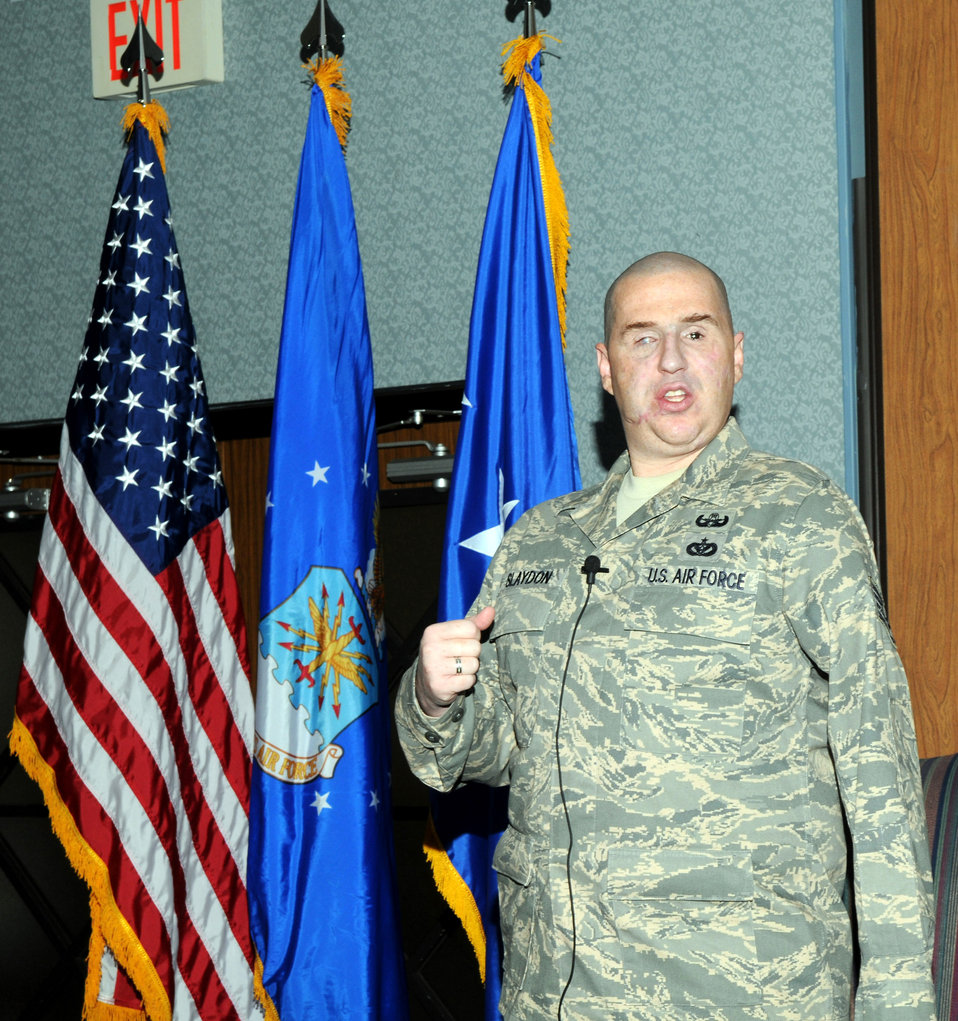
Wounded Airman: 'Absolute privilege to defend America'

Staff Sgt. Matthew Slaydon talks about his injuries and subsequent rehabilitation during the Alamo Chapter of the Air Force Association's